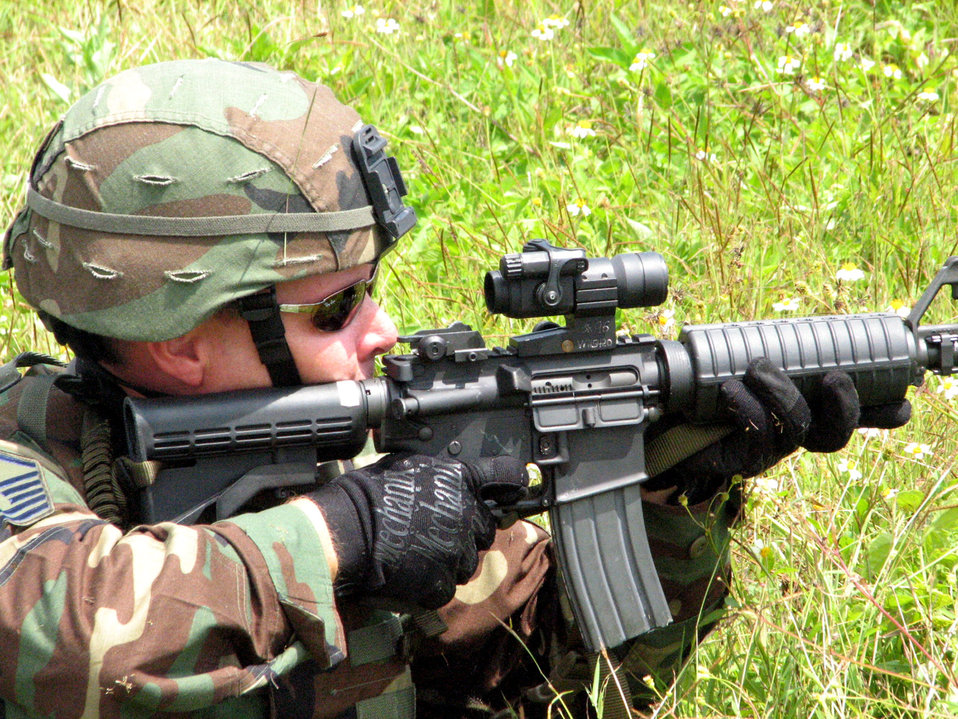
Anderson Airmen hone combat skills

An Airman lays down suppressive fire during training Feb. 26 at Andersen Air Force Base, Guam. Airmen from the 36th Contingency Response Group were participating in a combat drill course.